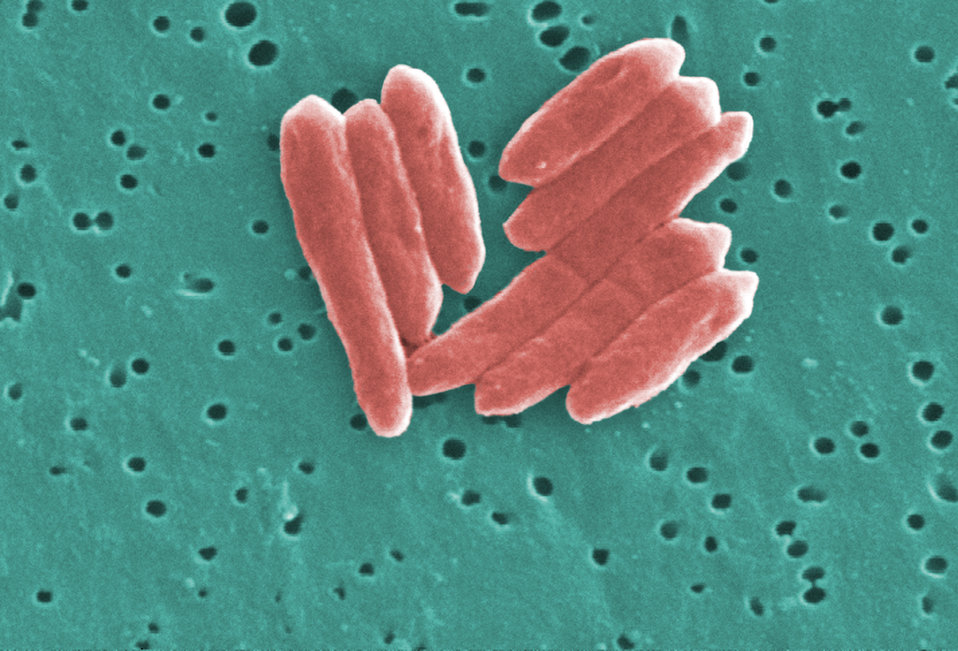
This digitally-colorized scanning electron micrograph (SEM) depicted a small grouping of Gram-negative Sebaldella termitidis bacteria.